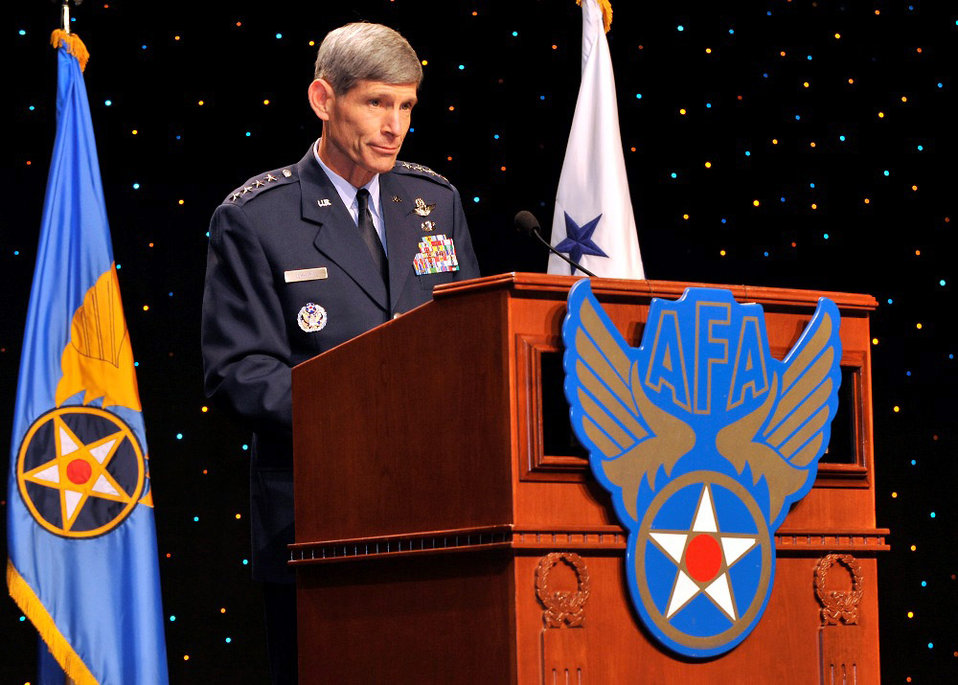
Gen. Schwartz addresses Air Force future

Air Force Chief of Staff Gen. Norton A. Schwartz speaks to attendees at the 24th annual Air Force Association Air & Space Conference and Technology Exposition Sept. 15 in Washington.